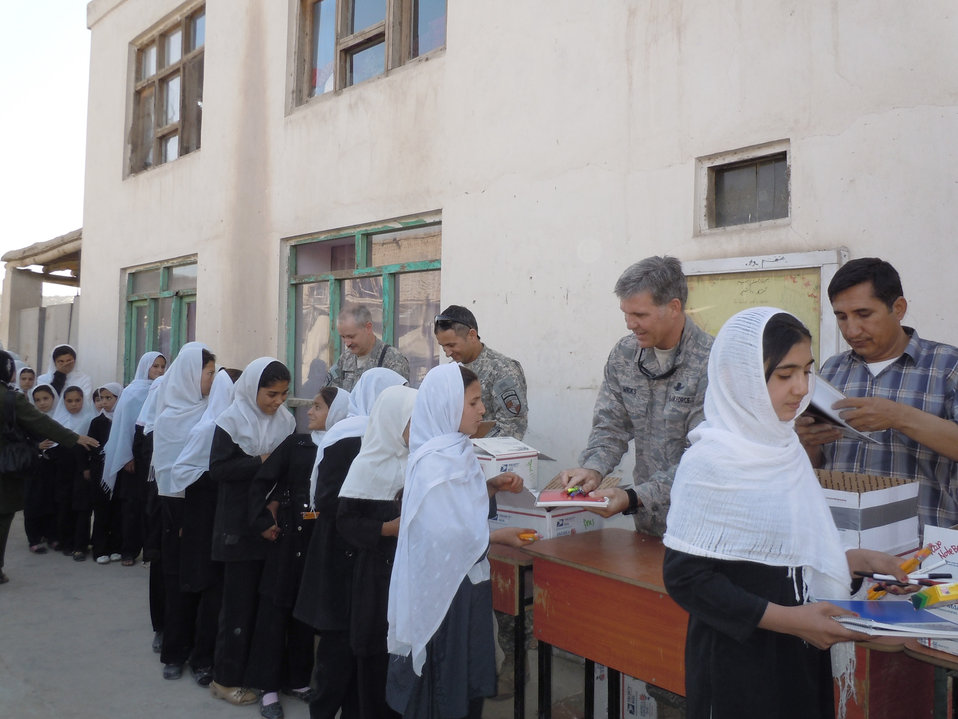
RSC-Capital Afghanistan adopts girls' school

Col. Bob Wicks (top right) and other members of Regional Support Command-Capital hand out supplies to young girls at a school in Kabul, Afghanistan. Colonel Wicks and the other RSC-Capital military service members adopted a girls' school and donated tents and supplies from care packages sent by family and friends. Colonel Wicks is the Regional Support Command-Capital commander.